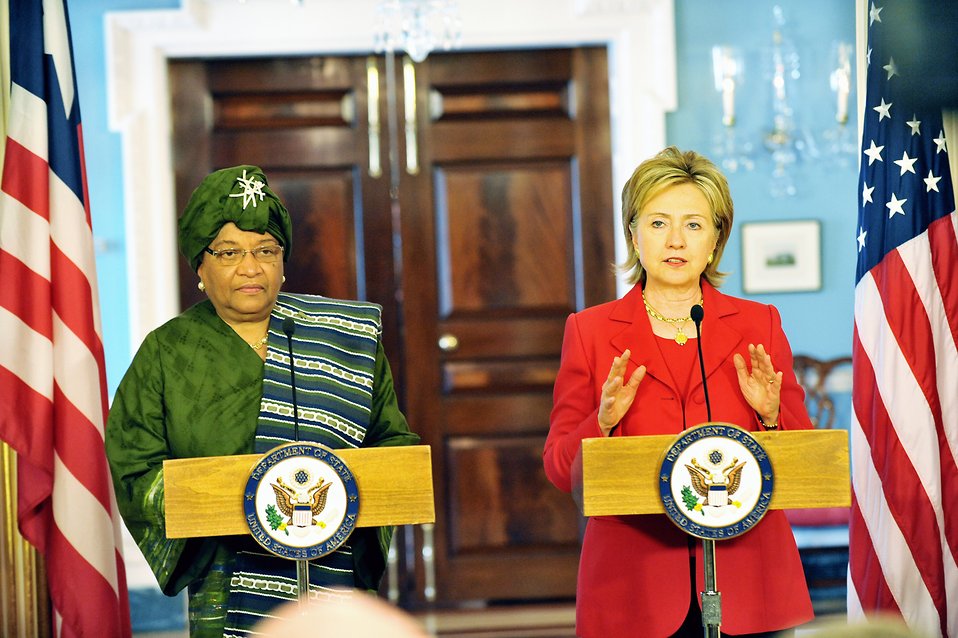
Secretary Clinton Meets With Liberian President

U.S. Secretary of State Hillary Rodham Clinton meets with Liberian President Ellen Johnson-Sirleaf at the U.S. Department of State in Washington, DC April 21, 2009.